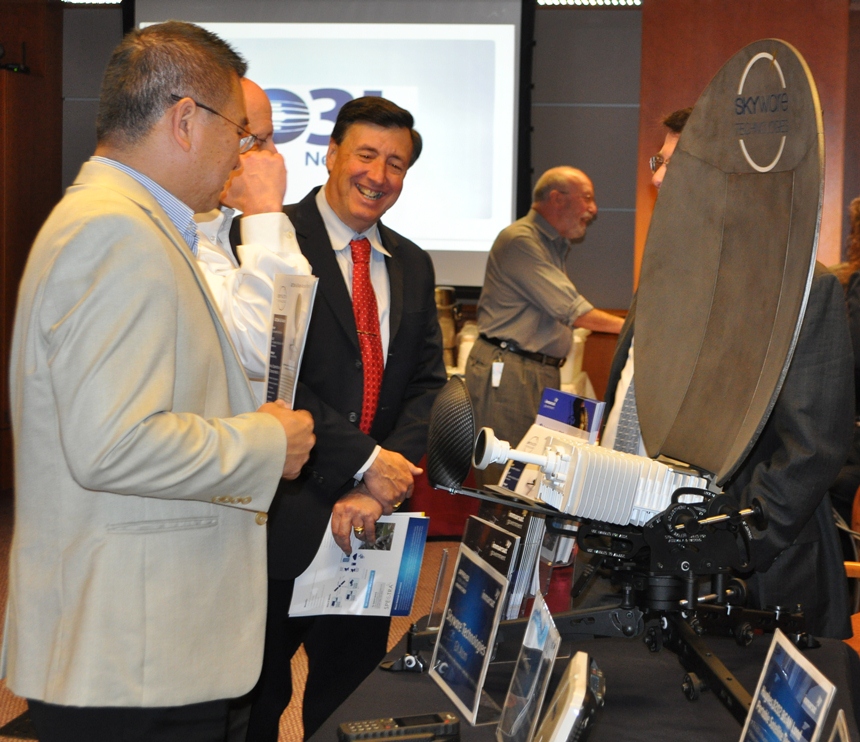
5.14.2014 Satellite Technology Demonstration

Satellite Technology Demonstration at FCC